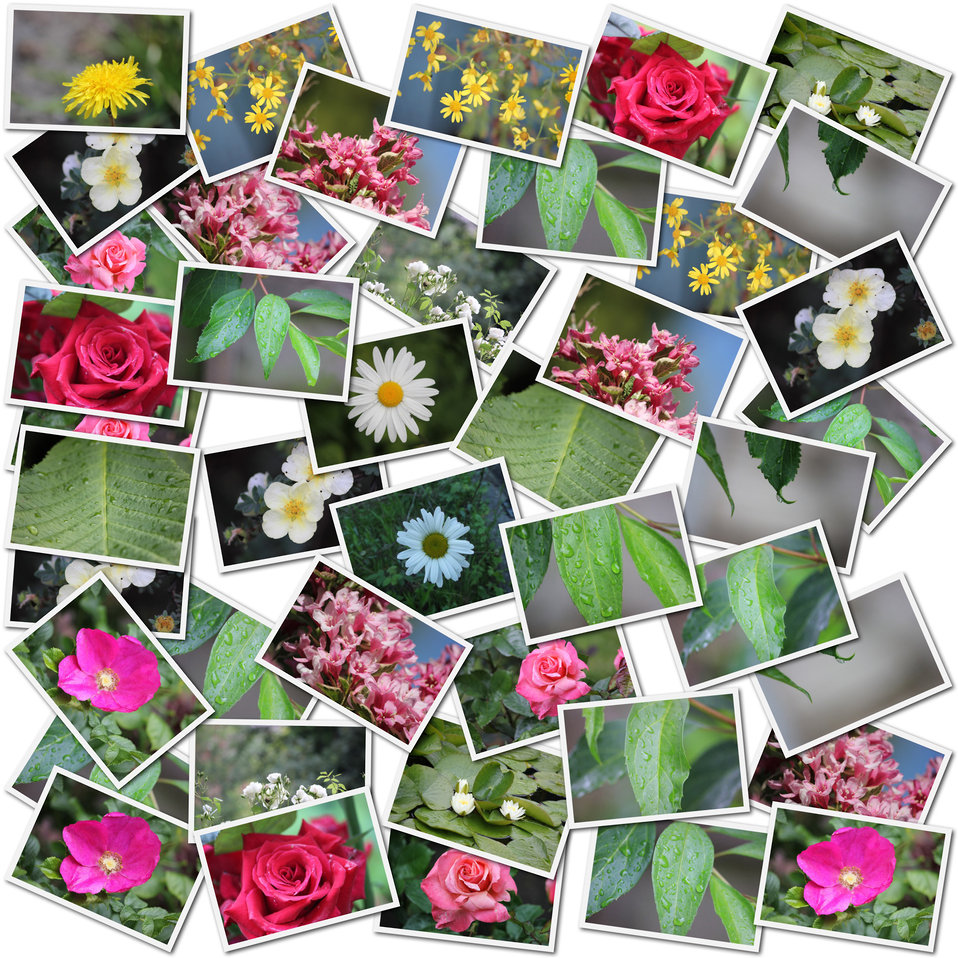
Flower and leaf - photo collage

Leaf and flower mosaic / collage.